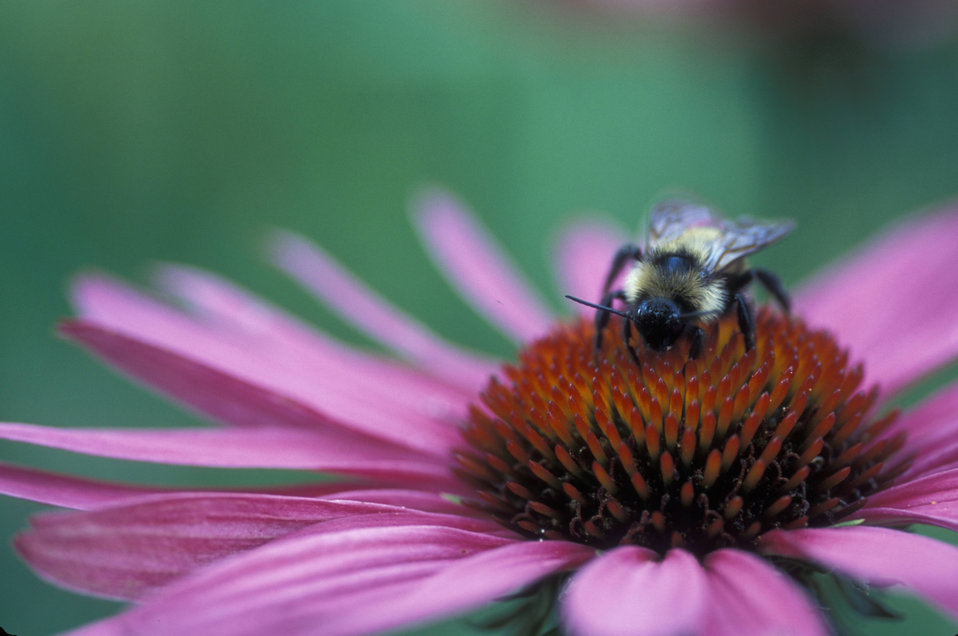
Bee on Echinacea Flower

Photo credit: USFWS/Ryan Hagerty

As the climate changes, plants will grow in different places and bloom at different times. That raises a high-stakes question: Will pollinators follow? If they cannot, then vital ecological relationships could be severed.